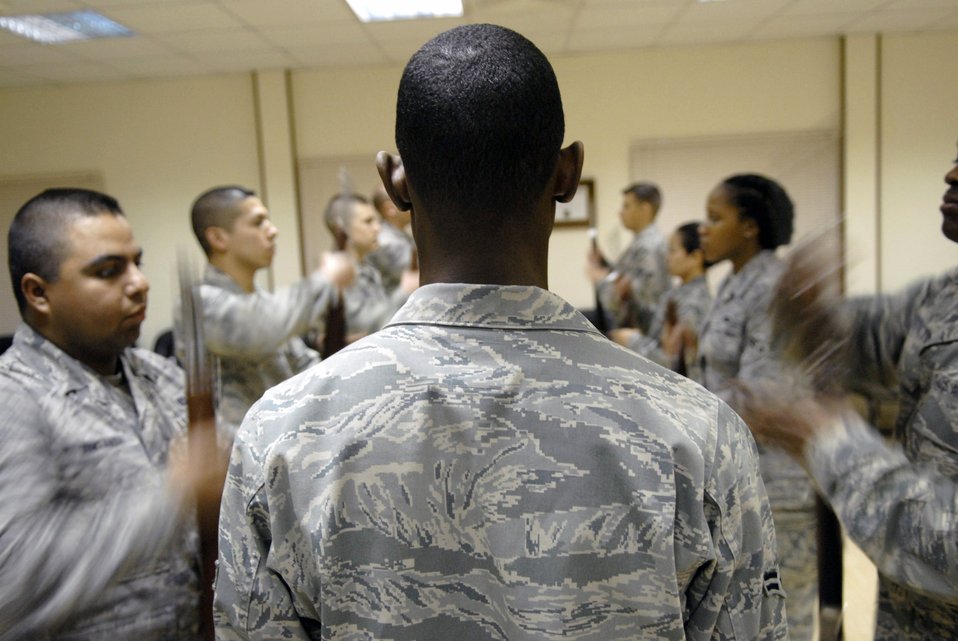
The honor guard makes their practice perfect

Airman 1st Class Clifford Daniel, a base honor guard instructor, observes honor guard team members during a drill practice with rifles April 7 at an air base in Southwest Asia. The team has 20 volunteer Airmen from different units in the 379th Air Expeditionary Wing who perform ceremonial duties to include change of commands, graduations, POW/MIA ceremonies and posting of the colors. Airman Daniel, assigned to the 379th Expeditionary Civil Engineer Squadron, hails from Louisville, Ky., and is deployed from Scott Air Force Base, Ill.